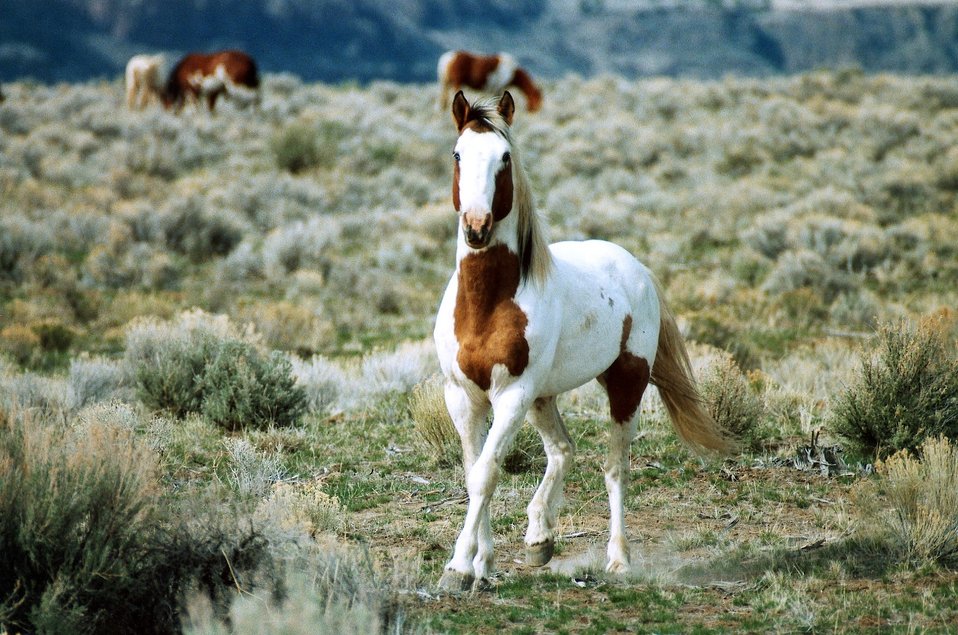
Medium shot of (alpha male) stallion.